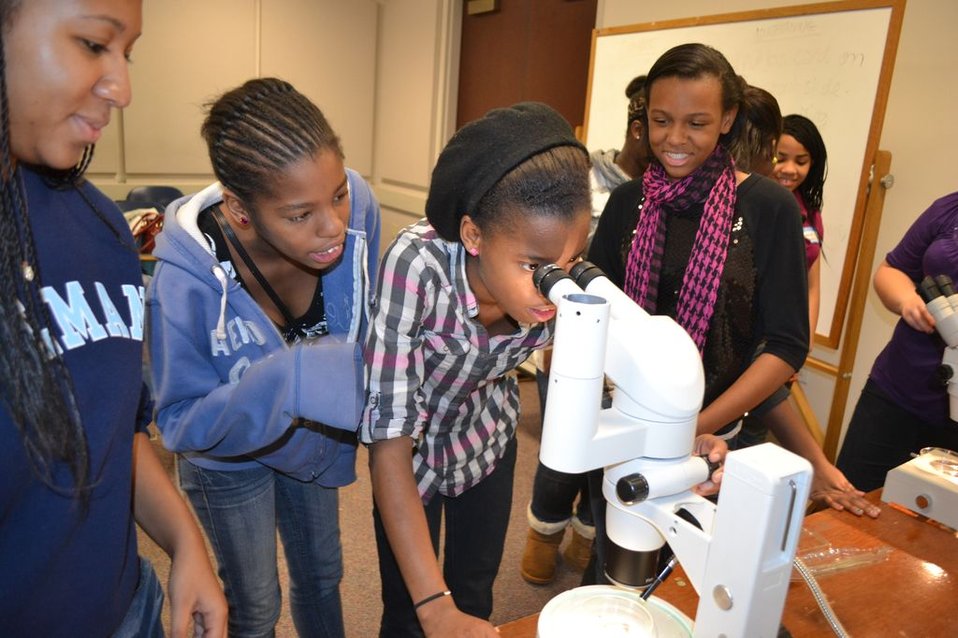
Spelman Girls Institute Nov 2012

At the Spelman Girls Institute, girls participated in workshops like Adventure Time, a forensics workshop that demonstrated the math and problem solving aspects of forensics in a Clue-meets-CSI challege.